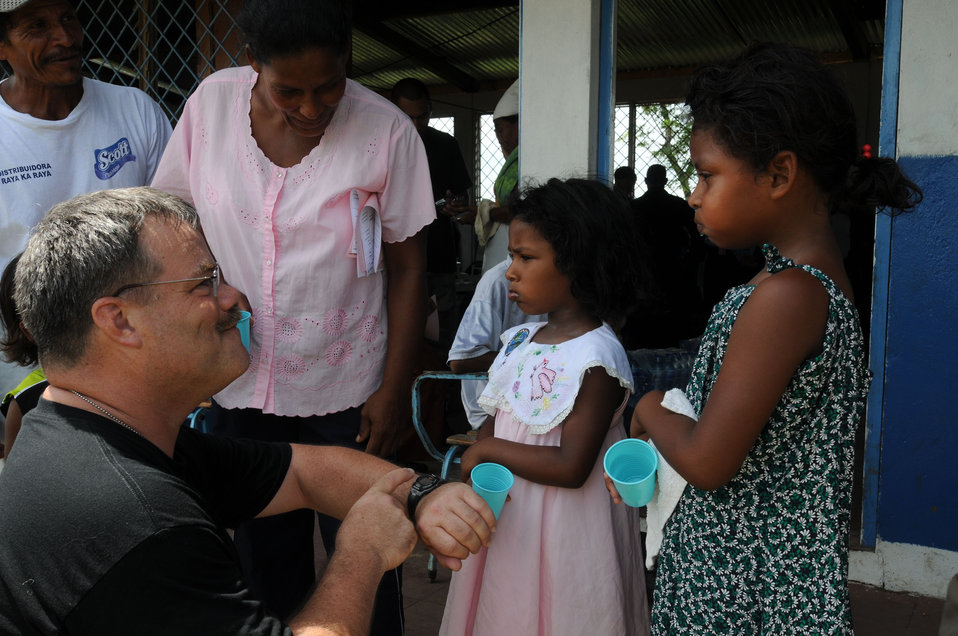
This 2008 photograph depicts U.S. Public Health Service (USPHS), Cmdr. Dale Bates talking to young female patients and their parents, as he was delivering medical care in Betania, Nicaragua, during Operation Continuing Promise 2008. In this particular view, Cmdr. Bates was discussing the ins and outs of proper dental care, as the young girls listened intently.